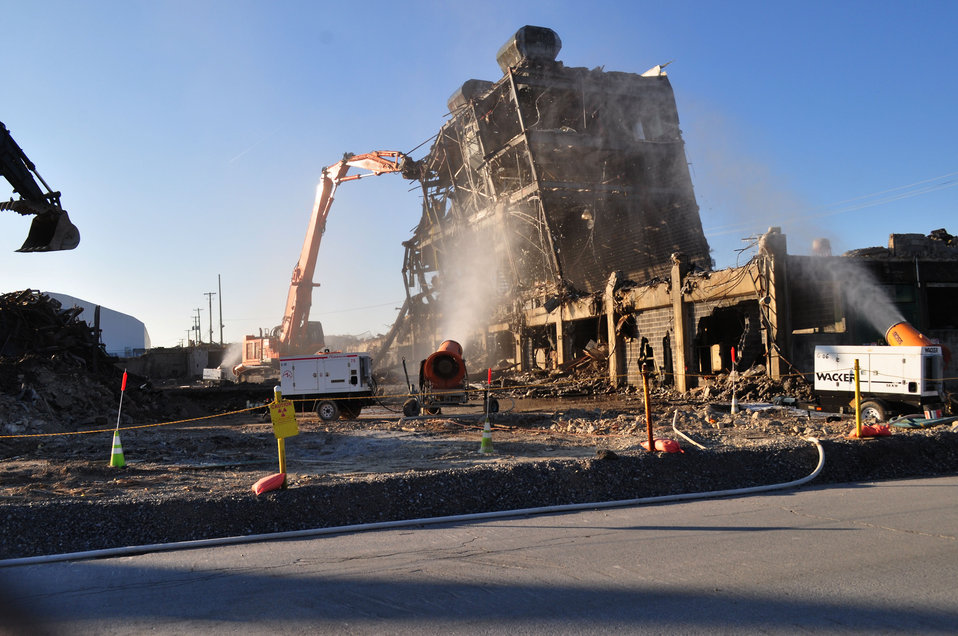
DandD of K-25 North Tower

13-005 DOE photo Lynn Freeny 1-23-2013 ETTP North Tower K-25 Oak Ridge Tennessee